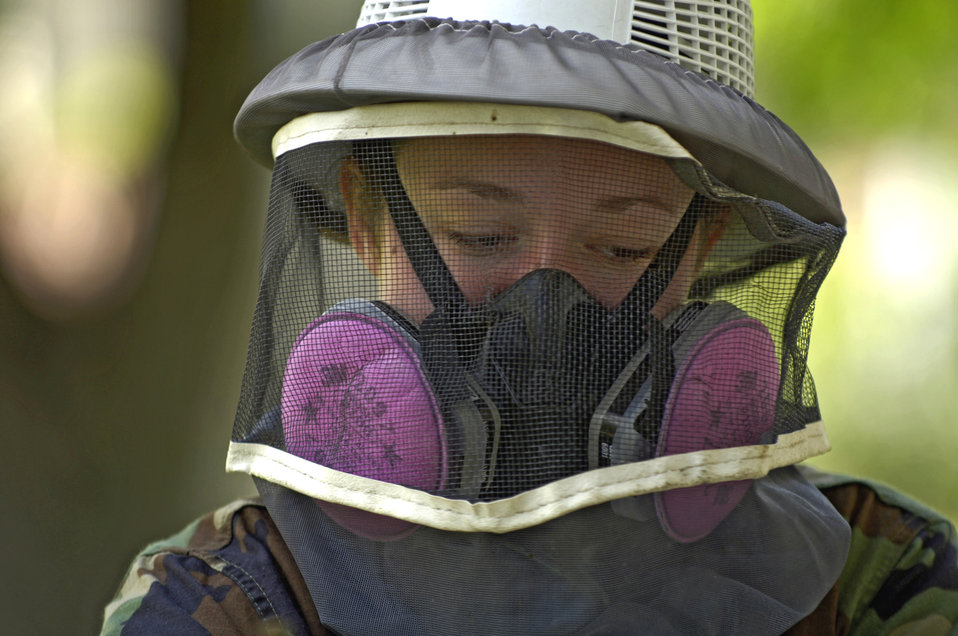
Bee-ing ready

Senior Airman Elizabeth Eggert looks at a nest of bees that took up residence in a housing area at Hickam Air Force Base, Hawaii, on Aug. 4. Airman Eggert is with the 15th Civil Engineer Squadron pest control section.